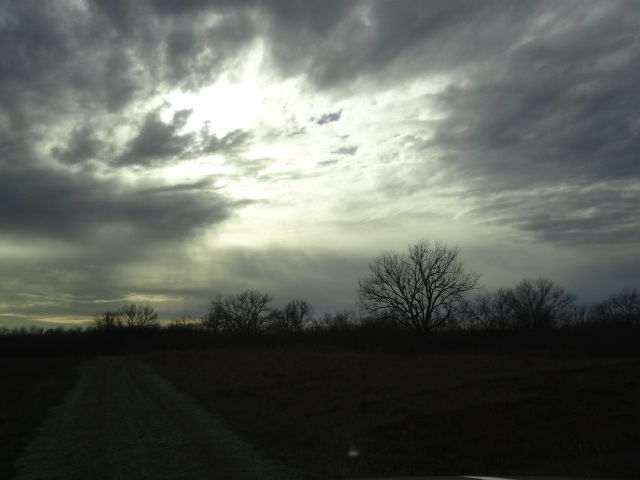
Beautiful Sky

Kansas can have the most beautiful skies during winter days.